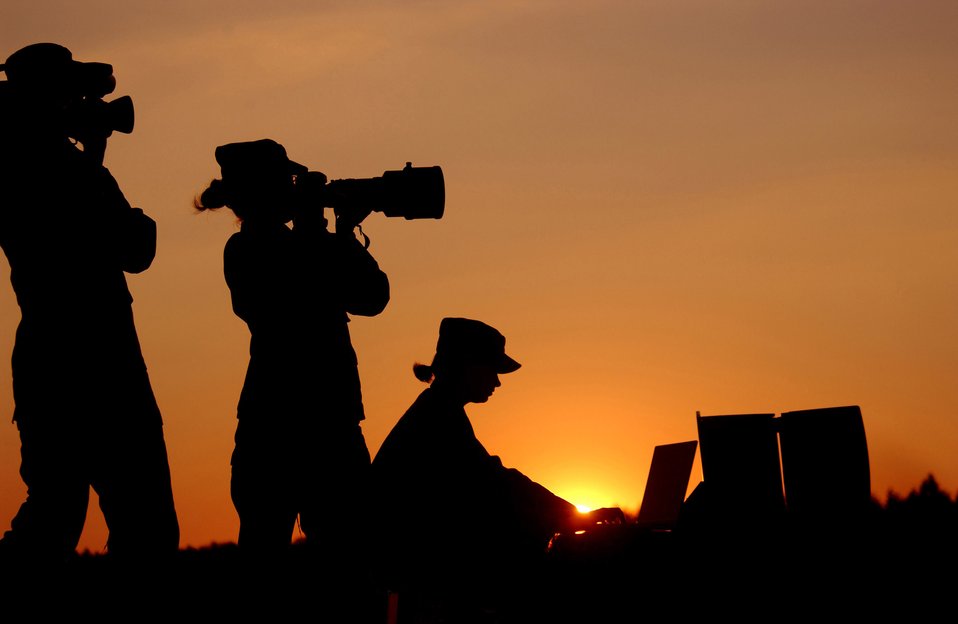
2007 Visual Information Award winners announced

An Air Force videographer (left to right), a still photographer and a graphics specialist are all highlighted by the setting sun. Airmen earned 13 first place awards, nine second place awards and 11 third place awards in the Defense Department 2007 Visual Information Awards contest.